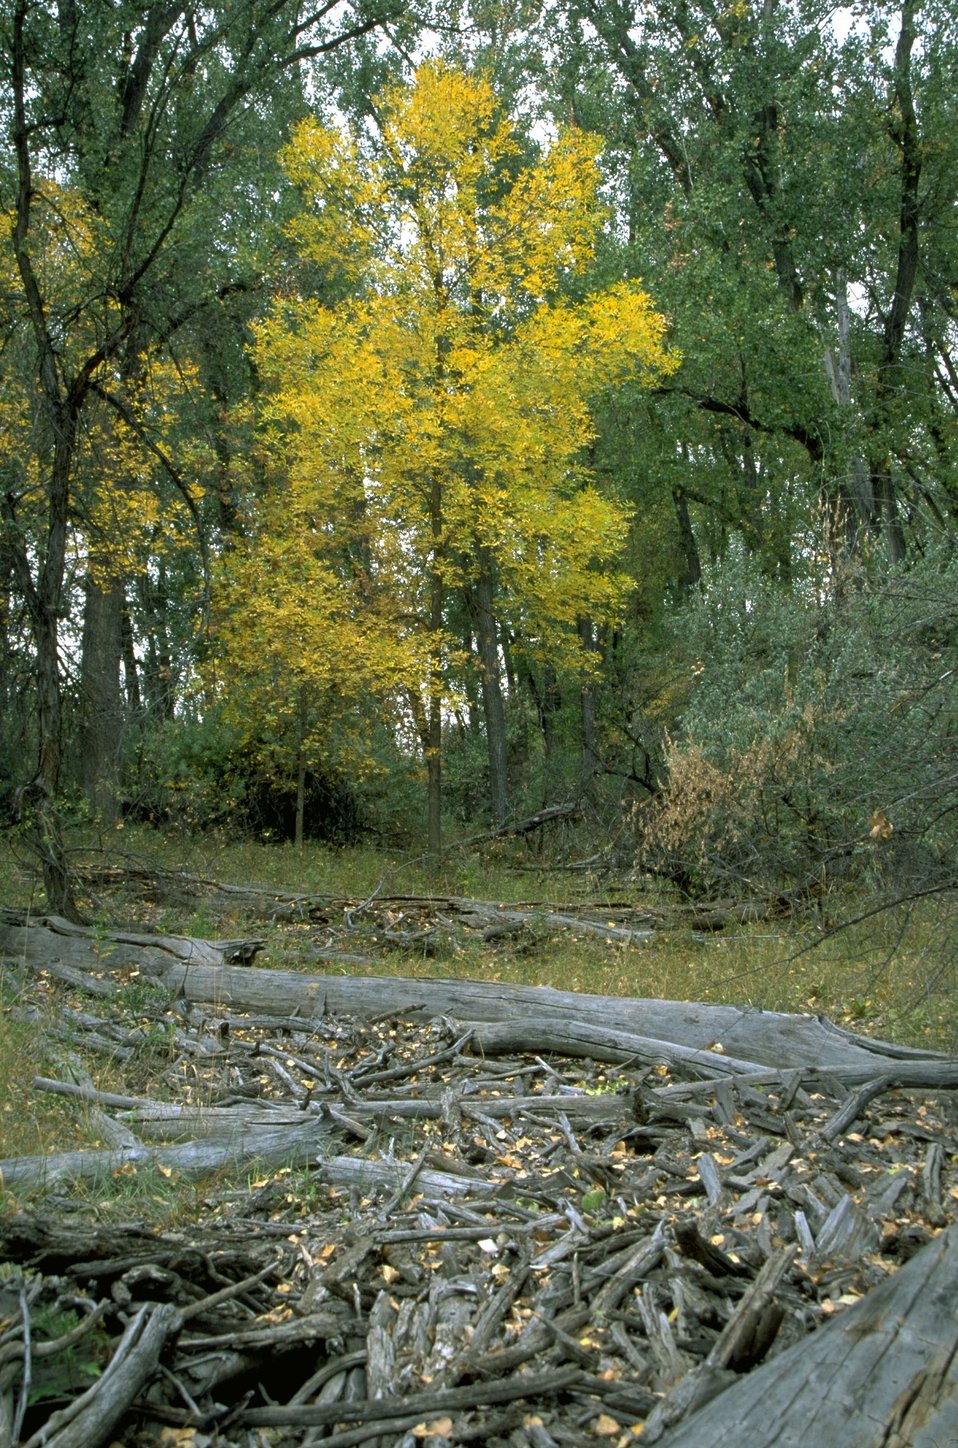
Autumn colors and deadwood at Howrey Island Recreation Area